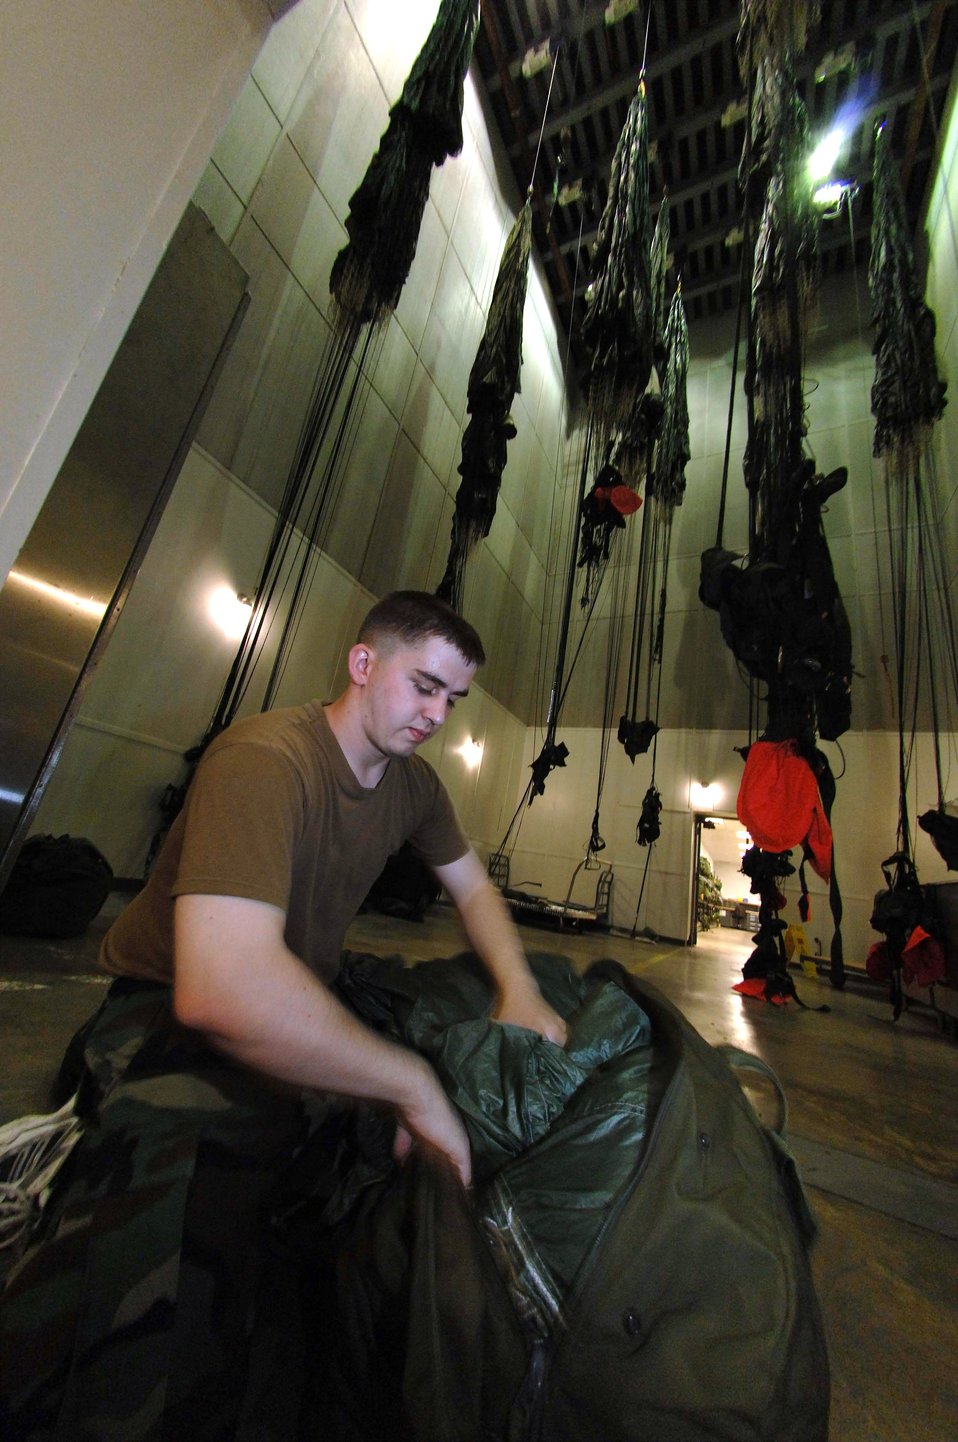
Aircrews depend on these Airmen

Senior Airman Daniel Danker places a parachute into a bag June 25 at the air-drying facility at Davis-Monthan Air Force Base, Ariz. Airman Danker is an aircrew flight equipment journeyman assigned to the 563rd Operation Support Squadron where he maintains parachutes for pararescuemen, along with other types of survival equipment.